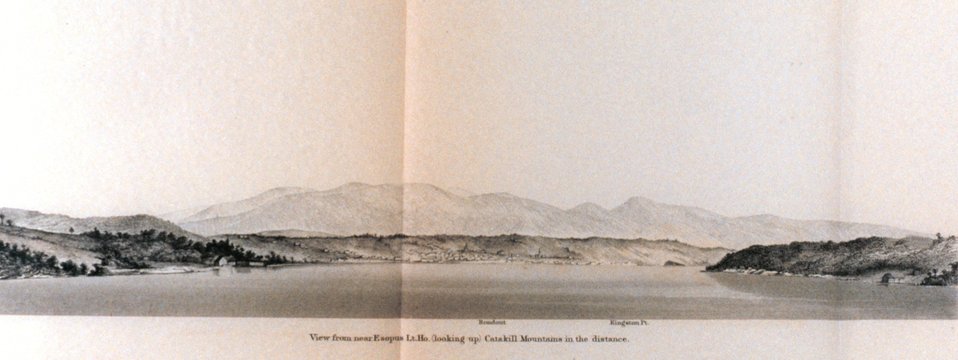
View from near Esopus Lt. House (Looking up.) Catskill Mountains in the distance. On the Hudson River. In: Atlantic Local Coast Pilot Sub-Division 13 South Coast of Long Island New York Bay and Hudson River 1880. P. 606. Library Call Number VK981.A3 1879 Sub-13 2nd ed. 1880.